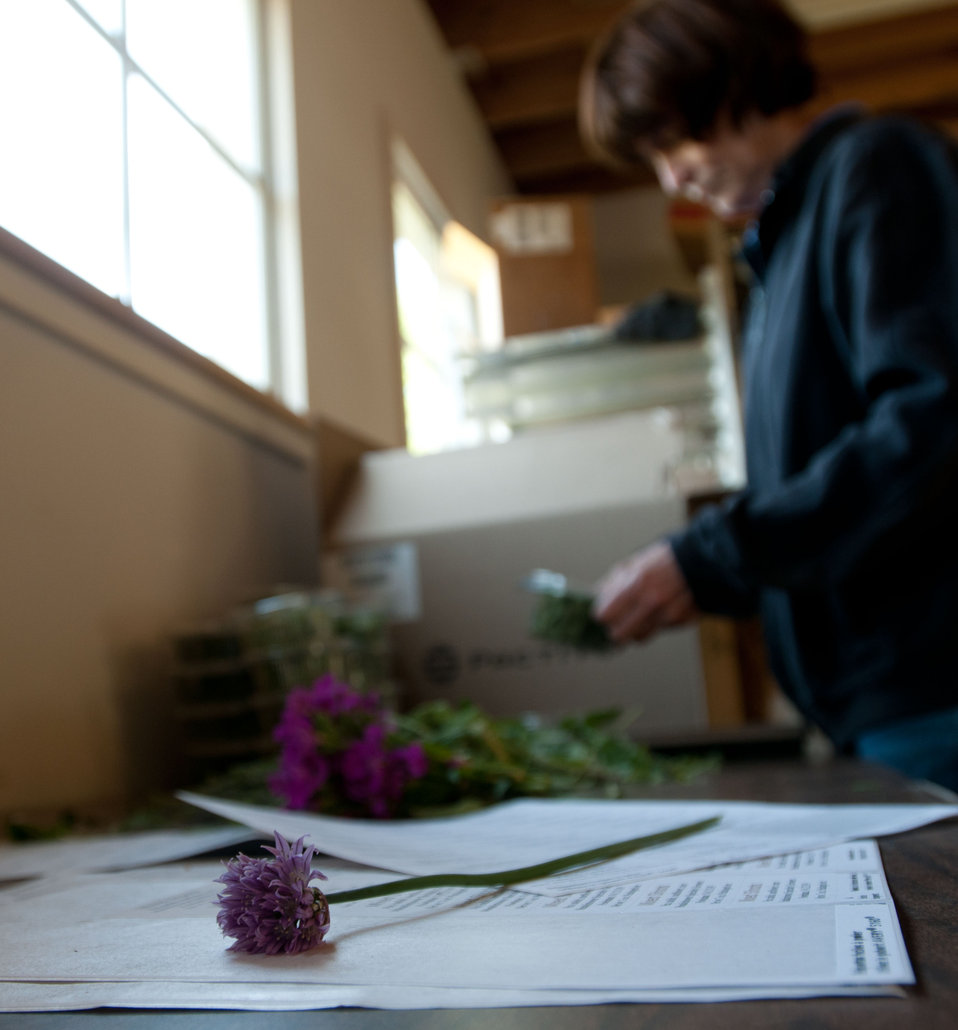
Claiborne Hammond packages fresh-cut herbs and ediable flowers at Manakintowne Specialty Growers, a 21-acre farm in Powhatan County, Virginia, on Friday, May 6, 2011. The farm specialty produce for chefs and markets of Richmond, Charlottesville and Williamsburg, VA area. This includes the online food hub of Lulus Local Food served by the Fall Line Farms cooperative. This is one of the farms that produces unique greens such as French Sorrel, Pea Shoots, Frisee, Tat soi, Mizuna, Pink/green radish shoots, Sunflower shoots, Baby red mustard, Tuscan Kale, Beet greens. All harvested by hand, micro greens such as Pak choi, Tat soi, Mizuna, Purple kohlrabi, Shungiku (edible chrysanthemum), Ruby chard, Purple/Daikon/Triton radish, Red amaranth and Bull's Blood Beet as well as edible flowers such as African Blue Basil, Nasturtiums, Johnny Jump Ups, and Chive blossoms Dianthus (pinks).. The seasonal choices are listed by suppliers and ordered by members on Lulus Local Food website, the food is distributed to pick-up points in the Richmond area. Together, they offer a wide variety of household food staples and specialty fruits, vegetables, meats, soaps, eggs, cheeses, flowers, honey, pastas, sauces, syrups, baked goods, mushrooms, flour and grains from and for the Richmond area.